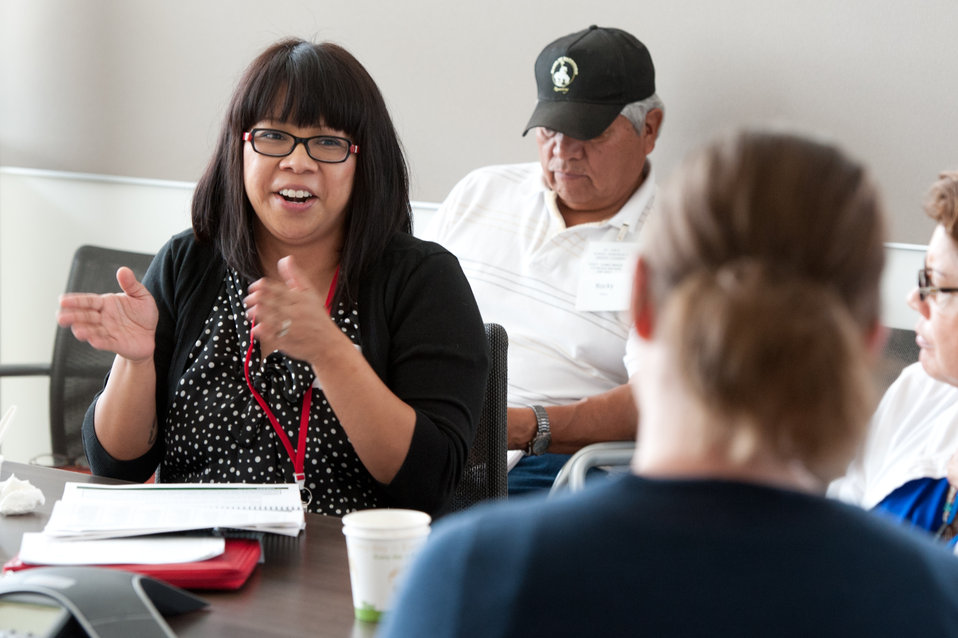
Office of Indian Energy Pilot Session

June 07, 2012 - Direlle Calica participates in a break out session as Tribal leaders and federal and university representatives take part in the Office of Indian Energy Pilot Session for Curriculum and Course Offerings held at NREL in Golden, Colorado.